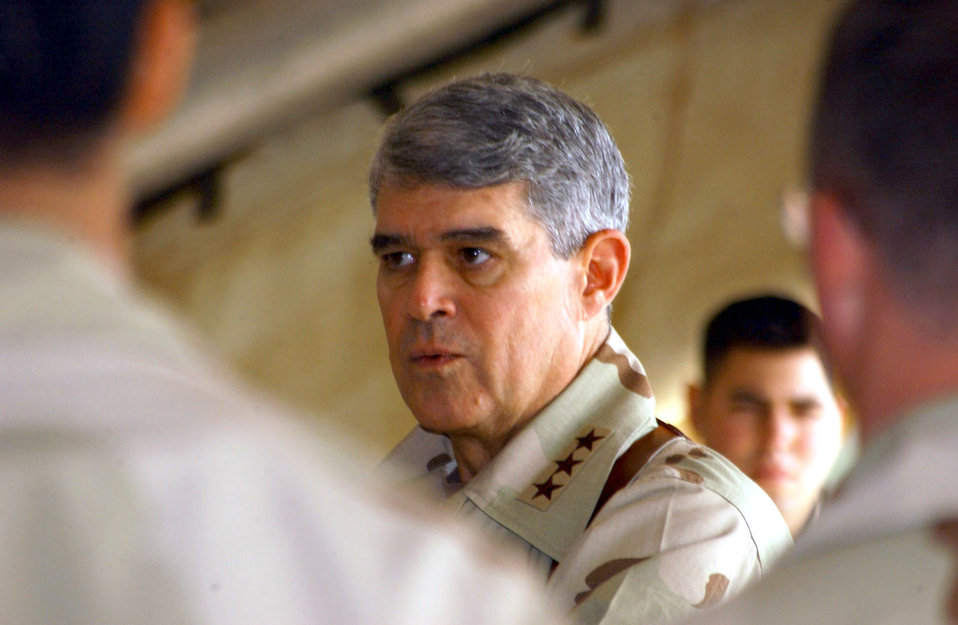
Kirkuk AB visit

KIRKUK AIR BASE, Iraq -- Lt. Gen. Lance Smith, U.S. Central Command deputy commander, answers questions from airmen assigned to the 354th Expeditionary Fighter Squadron here. The general visited Kirkuk and two other bases in Iraq on Jan. 12.